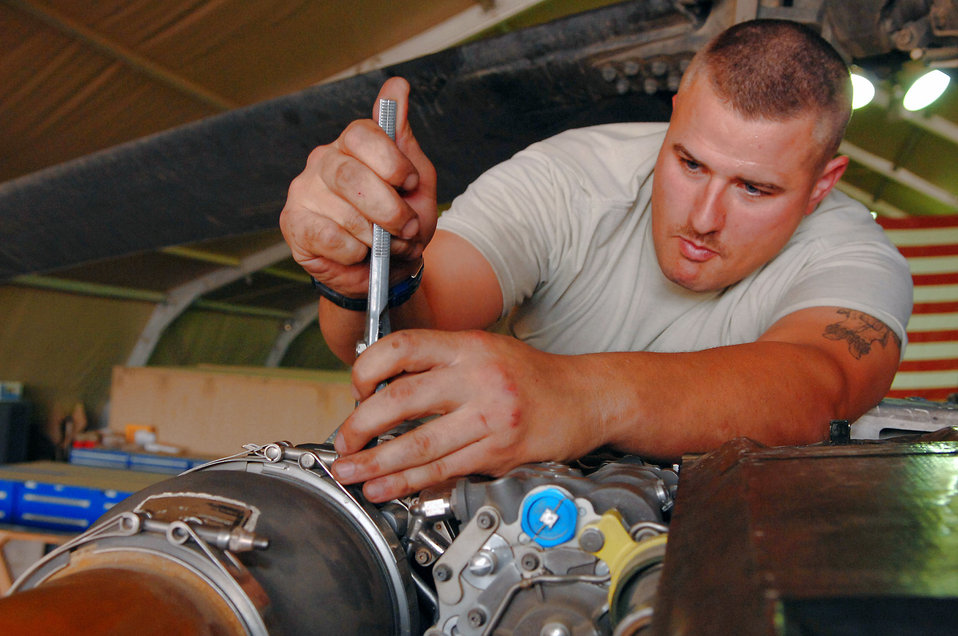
Helo maintenance

Staff Sgt. Tait Delzer tightens a component on the left-hand engine of an HH-60 Pave Hawk helicopter here March 12. Sergeant Delzer, a crew chief with the 64th Expeditionary Helicopter Maintenance Unit, performed an inspection on the aircraft after it had been flown 300 hours. During the inspection, all of the panels and covers were removed to facilitate preventative maintenance on the aircraft's systems and equipment. Sergeant Delzer is deployed from Moody Air Force Base, Ga.